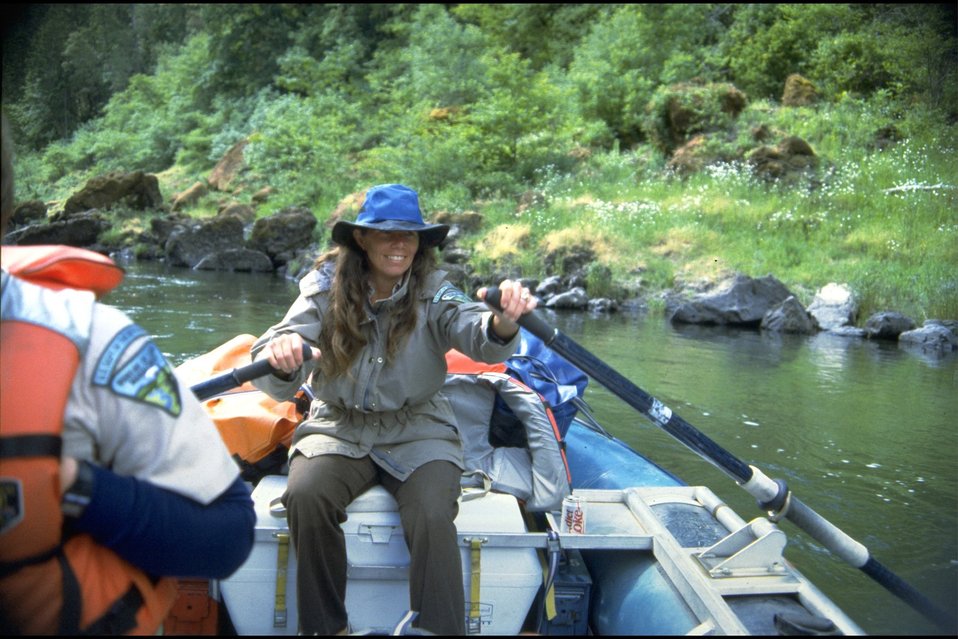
Rogue River, wild section; Louise Austermuehle, BLM River Staff, rowing on maintenance trip.